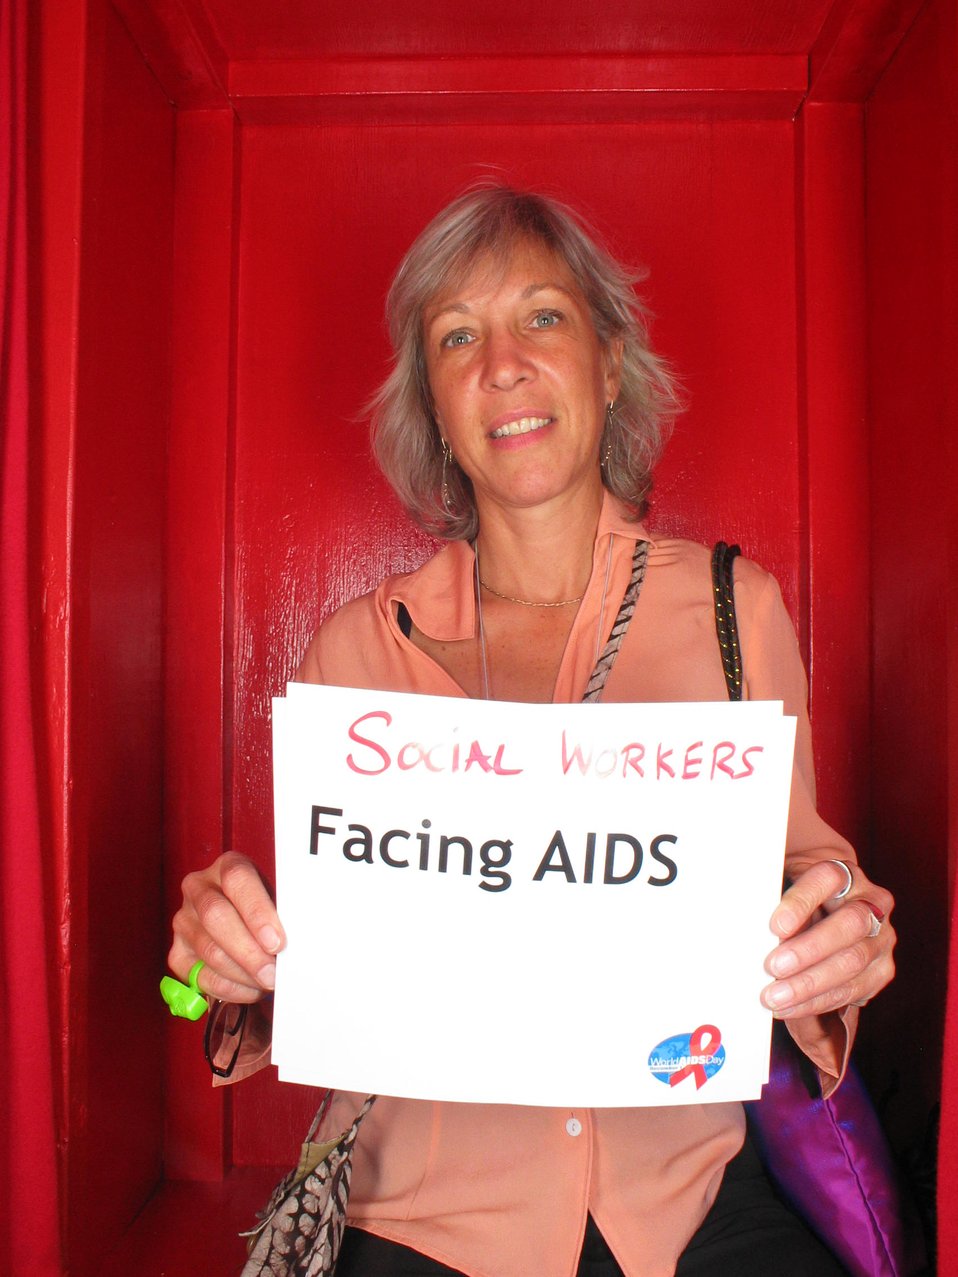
Social Workers Facing AIDS